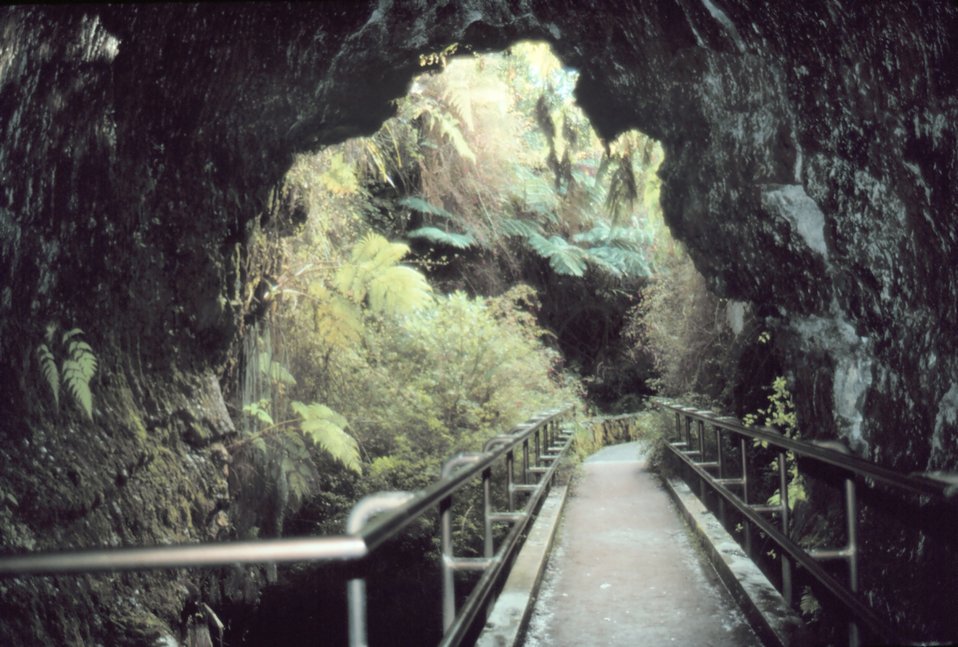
Inside Thurston Lava Tube